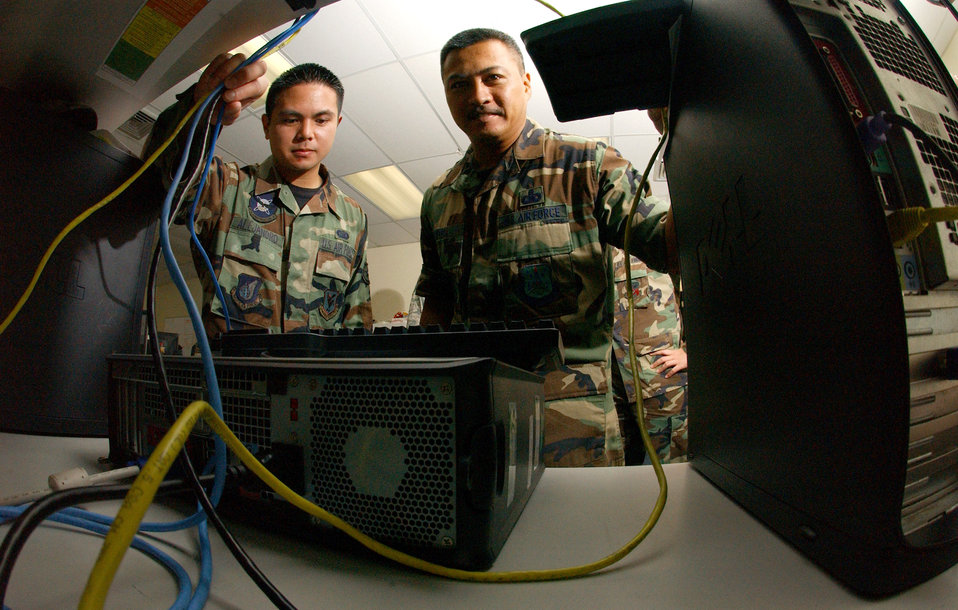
Cyber Airmen fight in America's newest battlefront

Senior Master Sgt. Vincent Devera (right) and Staff Sgt. Matthew Alejandro are framed by computer components at the Andersen Air Force Base, Guam, network control center. Sergeant DeVera, the chief of the local network control center, was responsible for bringing a team of Airmen together who deployed here from various organizations and fusing them into one cohesive unit.